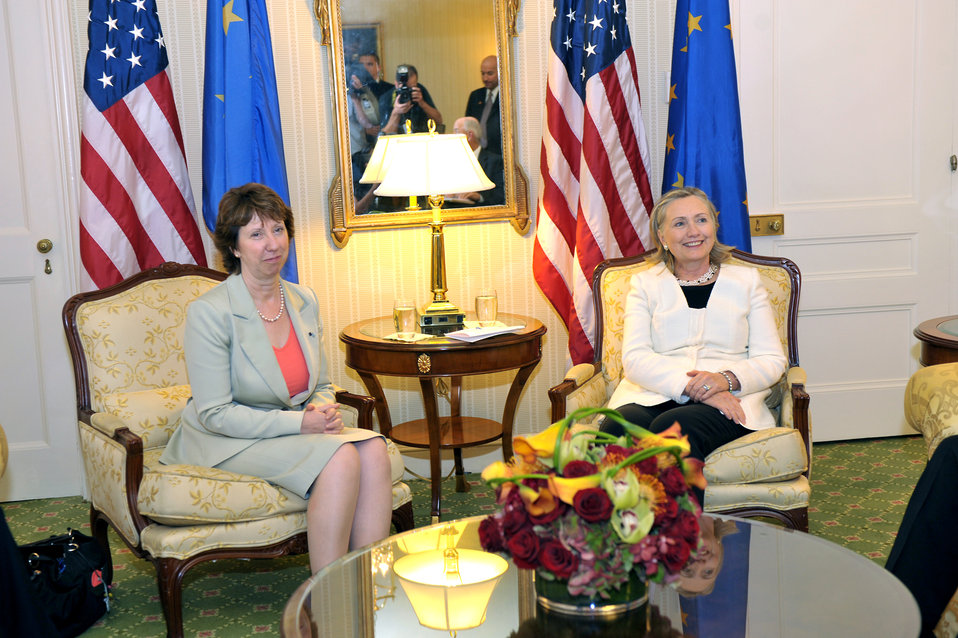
Secretary Clinton Holds a Bilateral Meeting With EU High Representative Ashton

U.S. Secretary of State Hillary Rodham Clinton holds a bilateral meeting with EU High Representative Catherine Ashton at the Waldorf Astoria in New York, New York, on September 20, 2010.